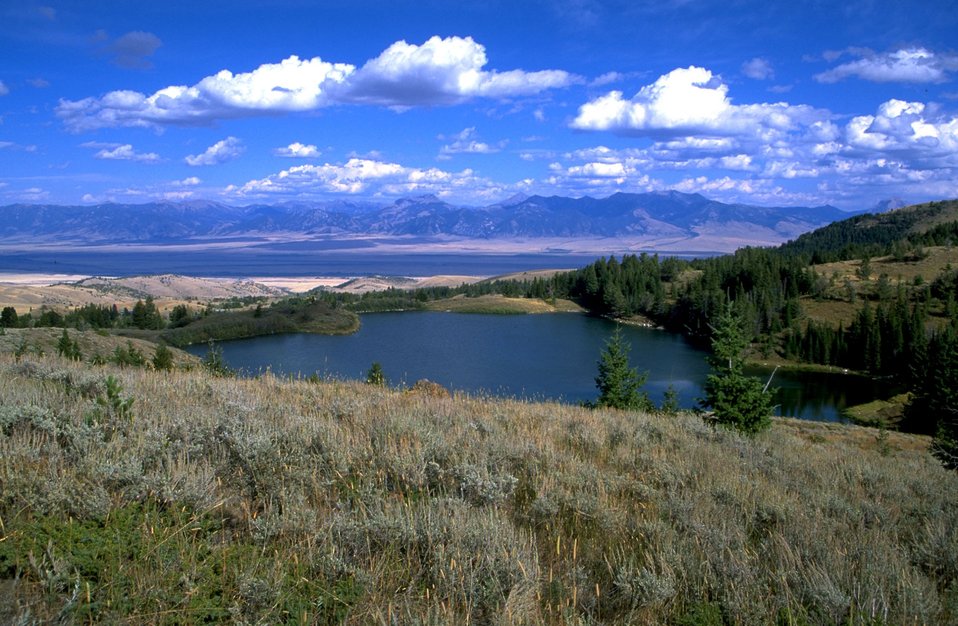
Axolotl Lake with Spanish Peaks in the background